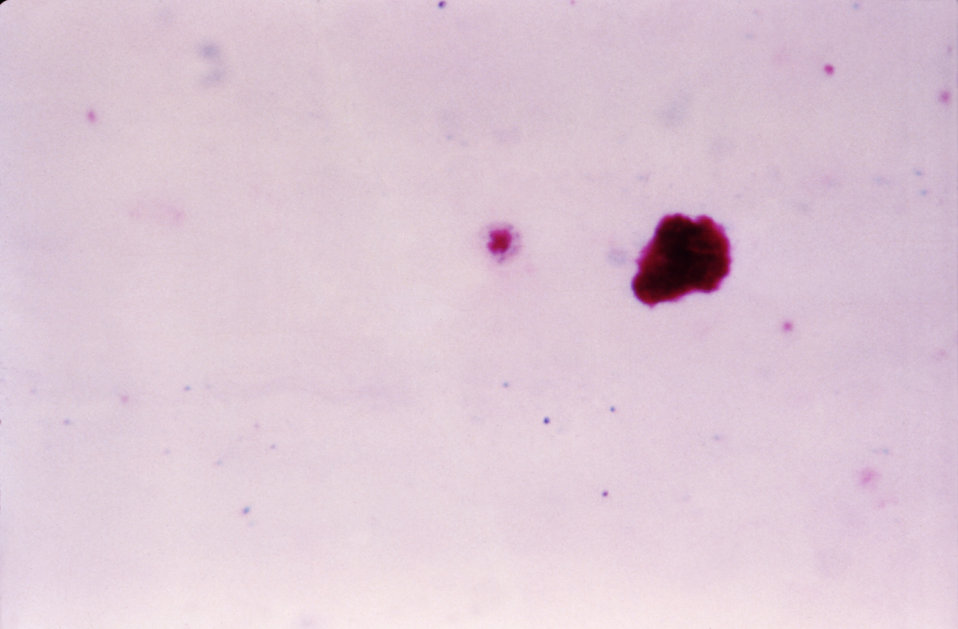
This thick film Giemsa stained micrograph reveals a Plasmodium falciparum gametocyte (Cntr).